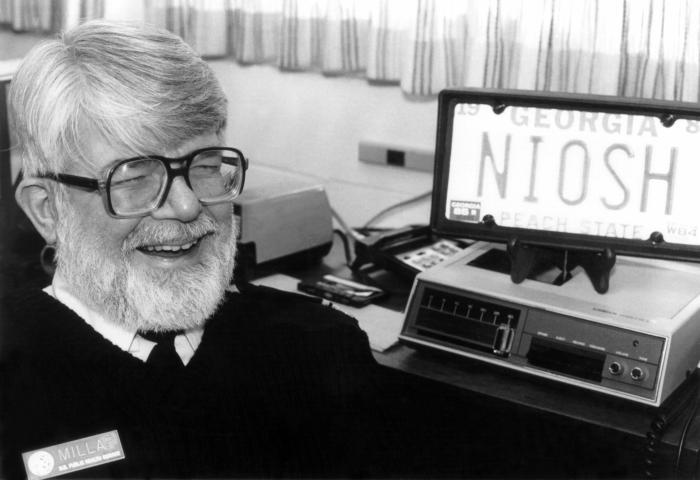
Here in this 1985 photograph, J. Donald Millar, MD, is seen sitting next to a NIOSH license plate.